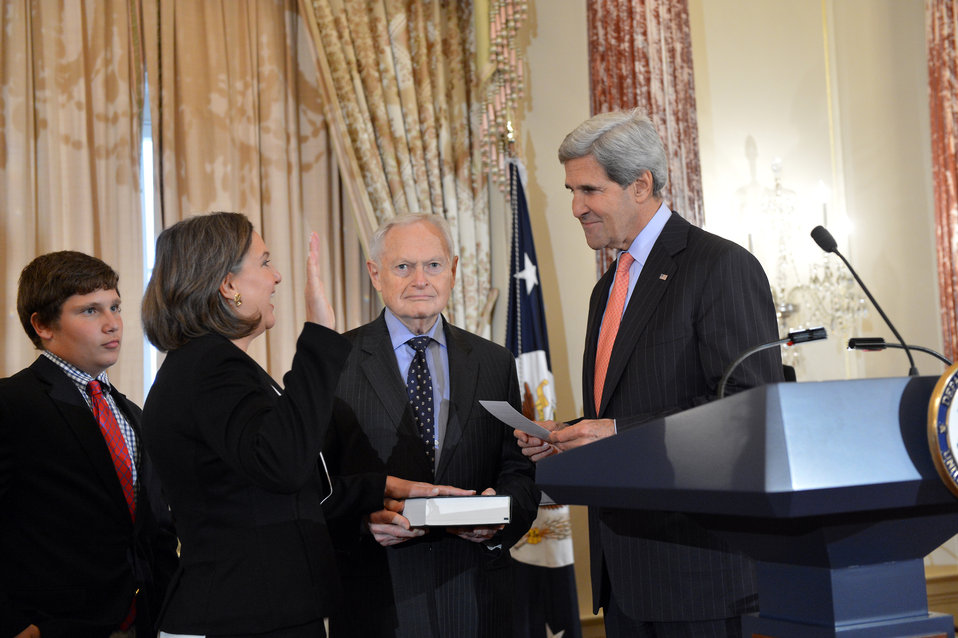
Secretary Kerry Hosts a Swearing-In Ceremony for Assistant Secretary Nuland

U.S. Secretary of State John Kerry hosts a swearing-in ceremony for Victoria Nuland as Assistant Secretary of State for European and Eurasian Affairs at the U.S. Department of State in Washington, D.C., on September 18, 2013.